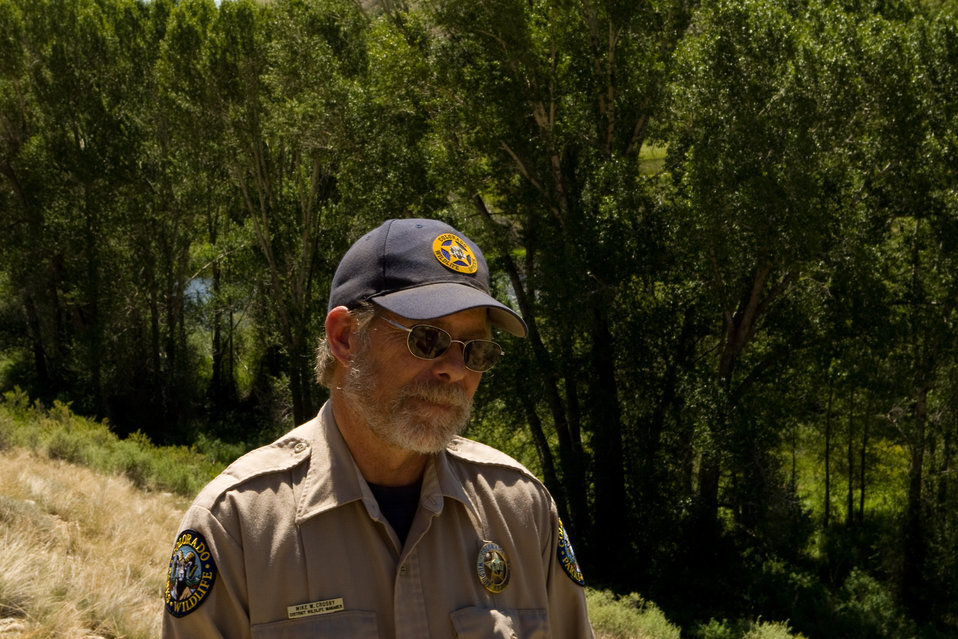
Colorado Rare Plant Conservation Initiative

The Colorado Rare Plant Conservation Initiative (RPCI) is a partnership of 23 statewide and regional agencies, private organizations, and academic institutions working to conserve 121 rare plants in Colorado. As part of these efforts the group developed the Colorado Rare Plant Conservation Strategy, developed Best Management Practices to reduce energy development impacts, addressed climate change, and developed focused strategies for the conservation of individual species at eight priority landscapes. The group has also worked to coordinate volunteer efforts for plant conservation across the state.